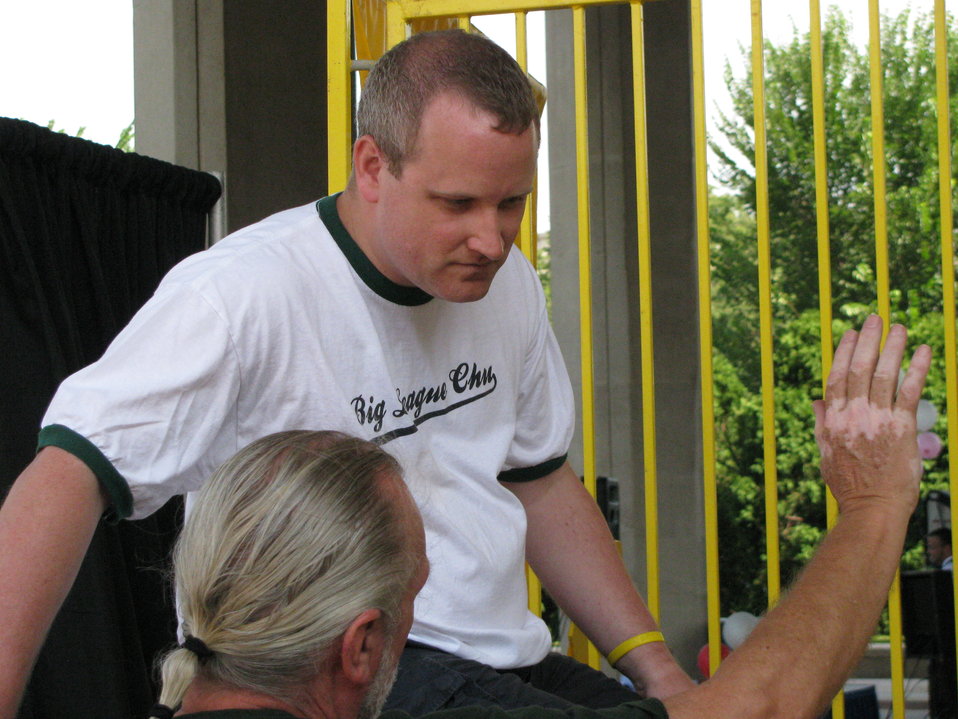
Director of Public Affairs Dan Leistikow in the dunk tank